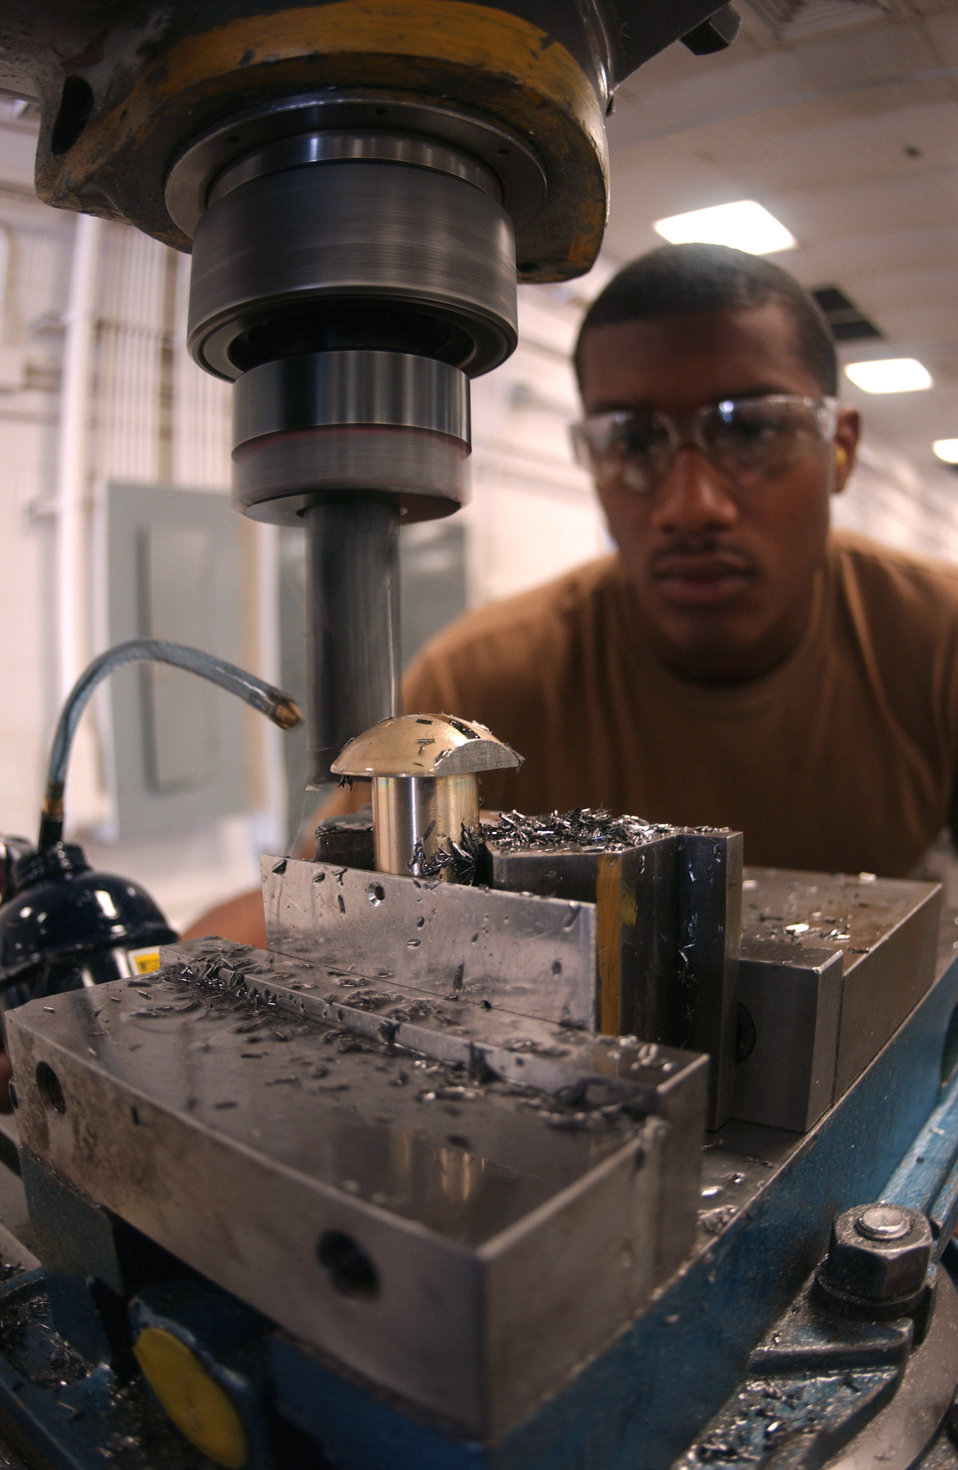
The bolt maker

LUKE AIR FORCE BASE, Ariz. -- Airman 1st Class Maurice Brigham cuts bolts to be used on aircraft here. Airman Brigham is a metal technician apprentice assigned to the 56th Equipment Maintenance Squadron.